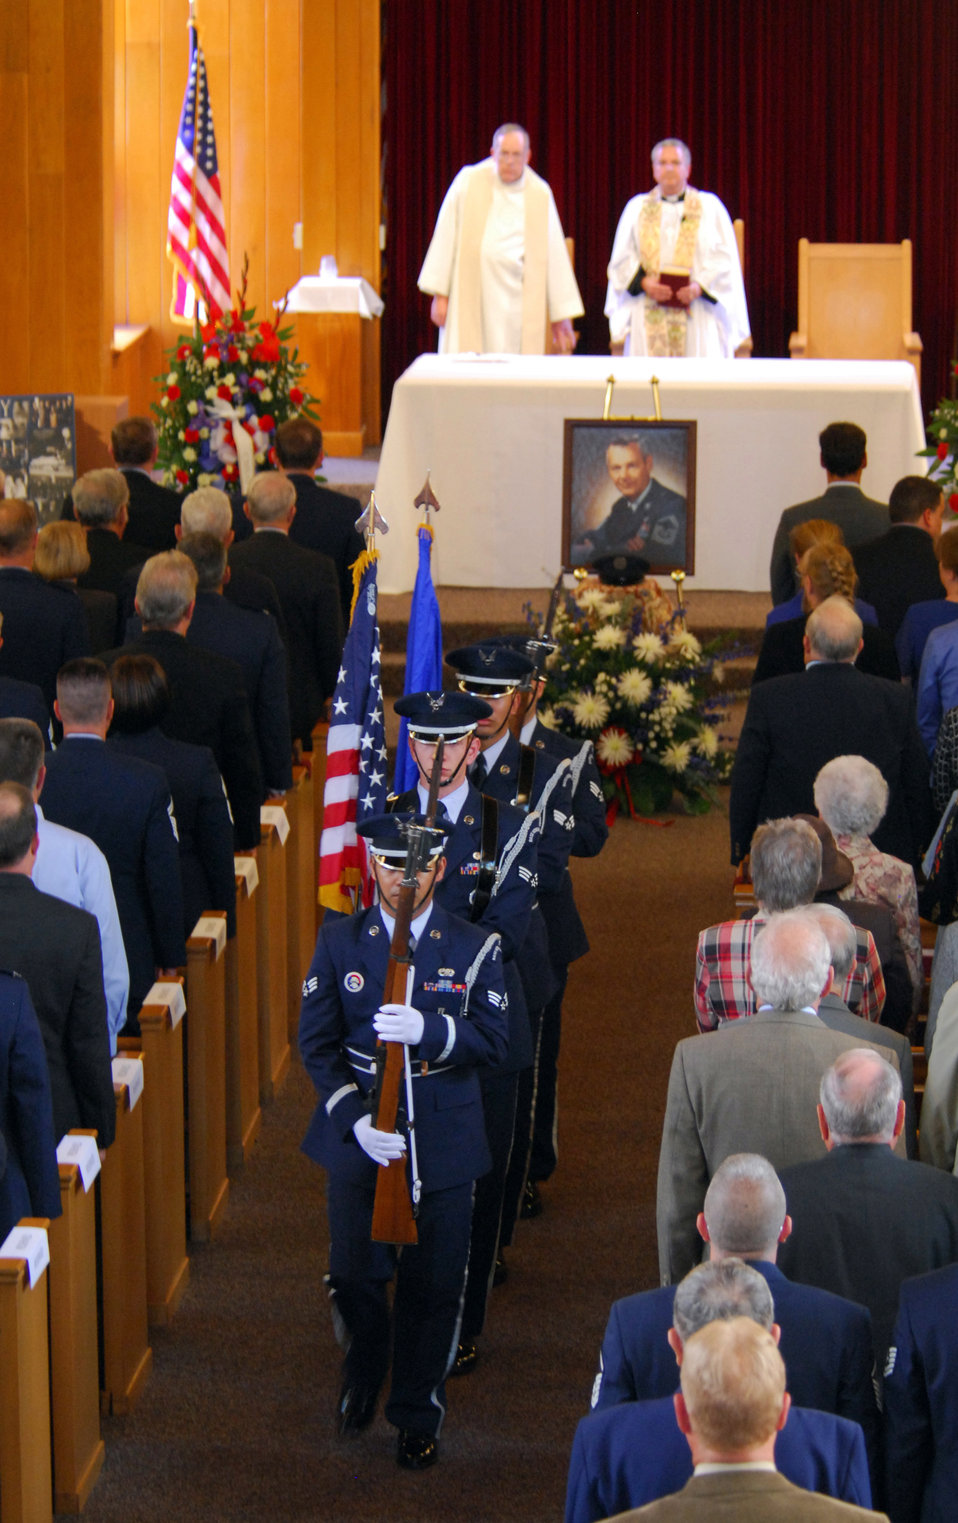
Airey memorial service celebrates life of AF hero

Members of the 325th Fighter Wing Honor Guard make their way out of the Tyndall Air Force Base Chapel March 16 after posting the Colors for the memorial service of the first Chief Master Sgt. of the Air Force, Paul W. Airey. Chief Airey died March 11, 2009 in Panama City, Fla.; he was 85 years old.